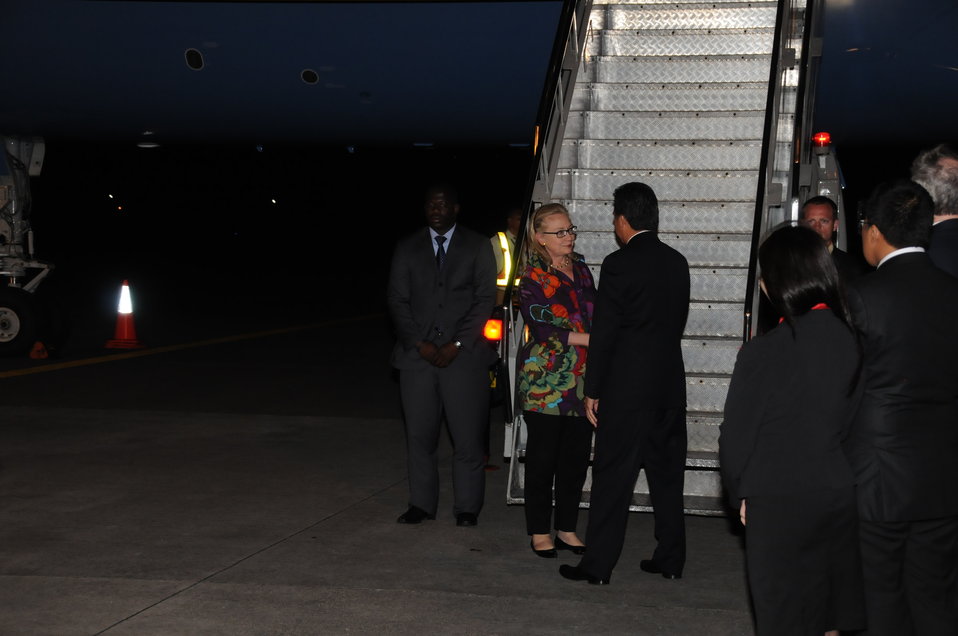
Secretary Clinton Shakes Hands With Indonesian Director for Protocol Kandou

U.S. Secretary of State Hillary Rodham Clinton, left, shakes hands with Indonesian Director for Protocol Harry Kandou, right, upon her arrival to Bali, Indonesia, on July 21, 2011.